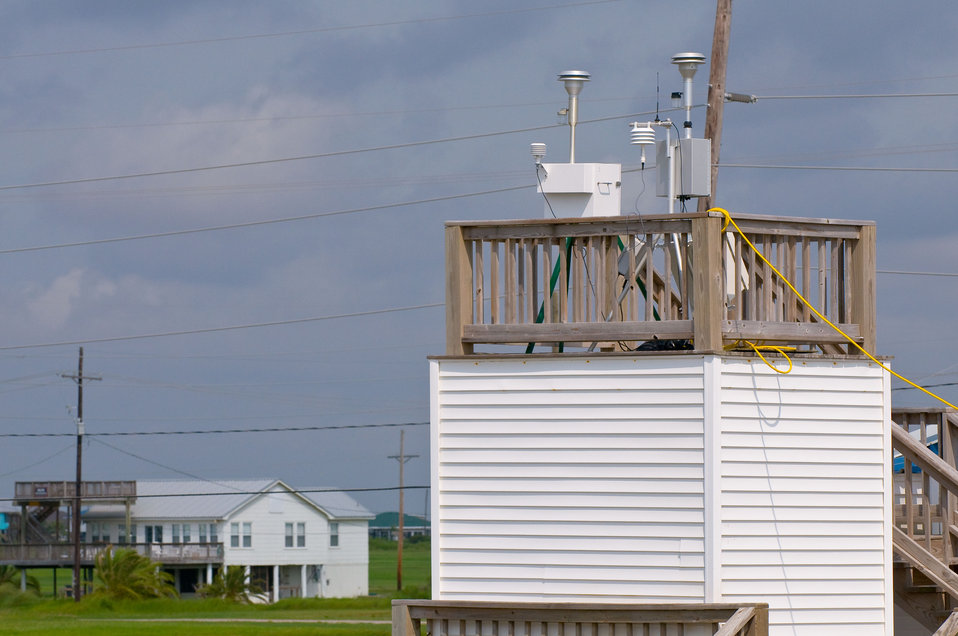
June 4, Monitoring air quality along the Gulf coast

Air monitoring equipment between the beach and neighborhoods on Grand Isle, La.